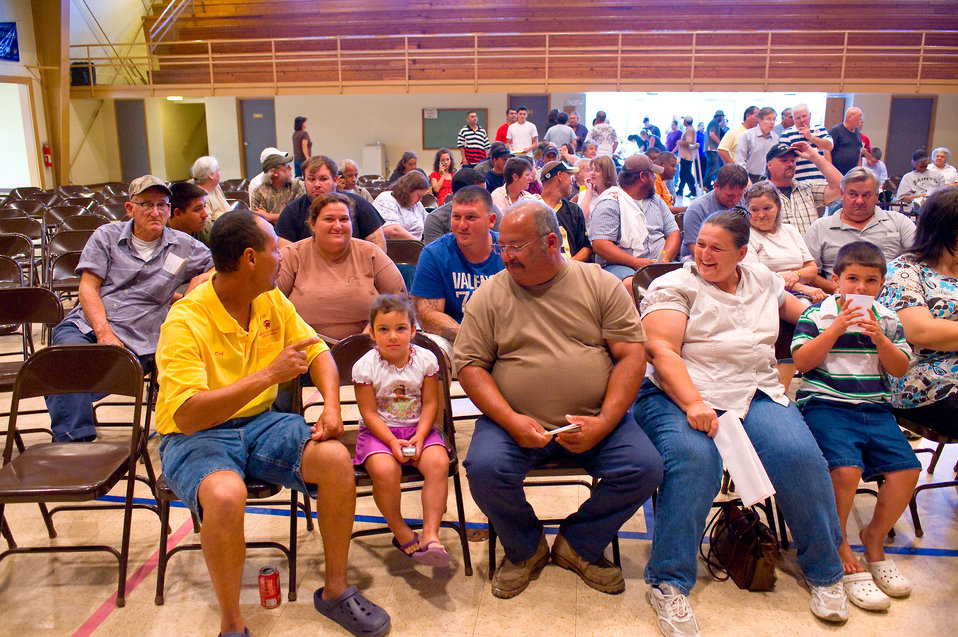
Concerned residents gather in to talk about the BP oil release.

May 13, 2010. Nearby residents gather inside the Dulac Community Center to talk with agency officials about their thoughts and concerns from the effects of the BP oil release.